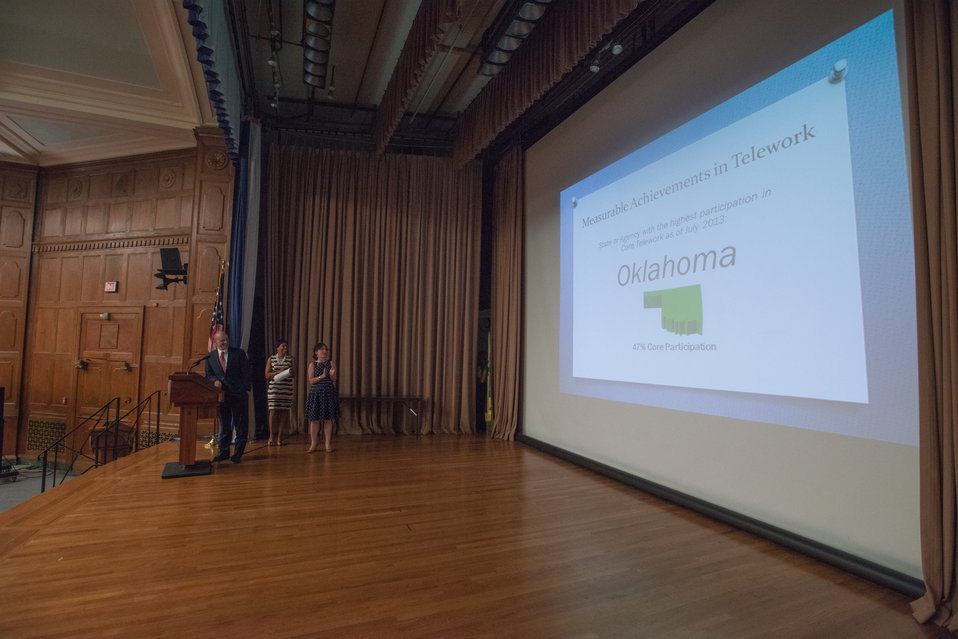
U.S. Department of Agriculture (USDA) Rural Development’s (RD) Acting Under Secretary Doug O'Brien speaks at the USDA’s RD 2nd Annual Cultural Transformation kickoff opening ceremony and forums, themed “Employees Influencing Change,” on Tuesday, Aug. 13, 2013 USDA in Washington, D.C.